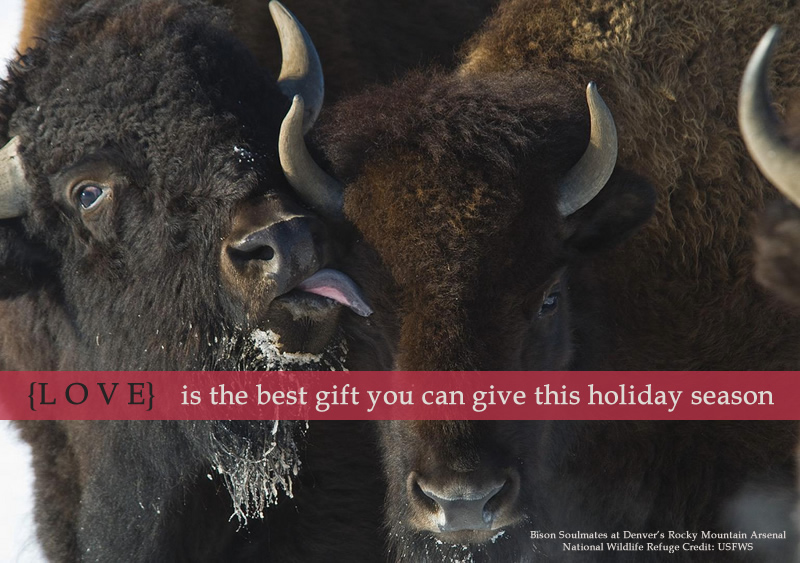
Bison Soulmates